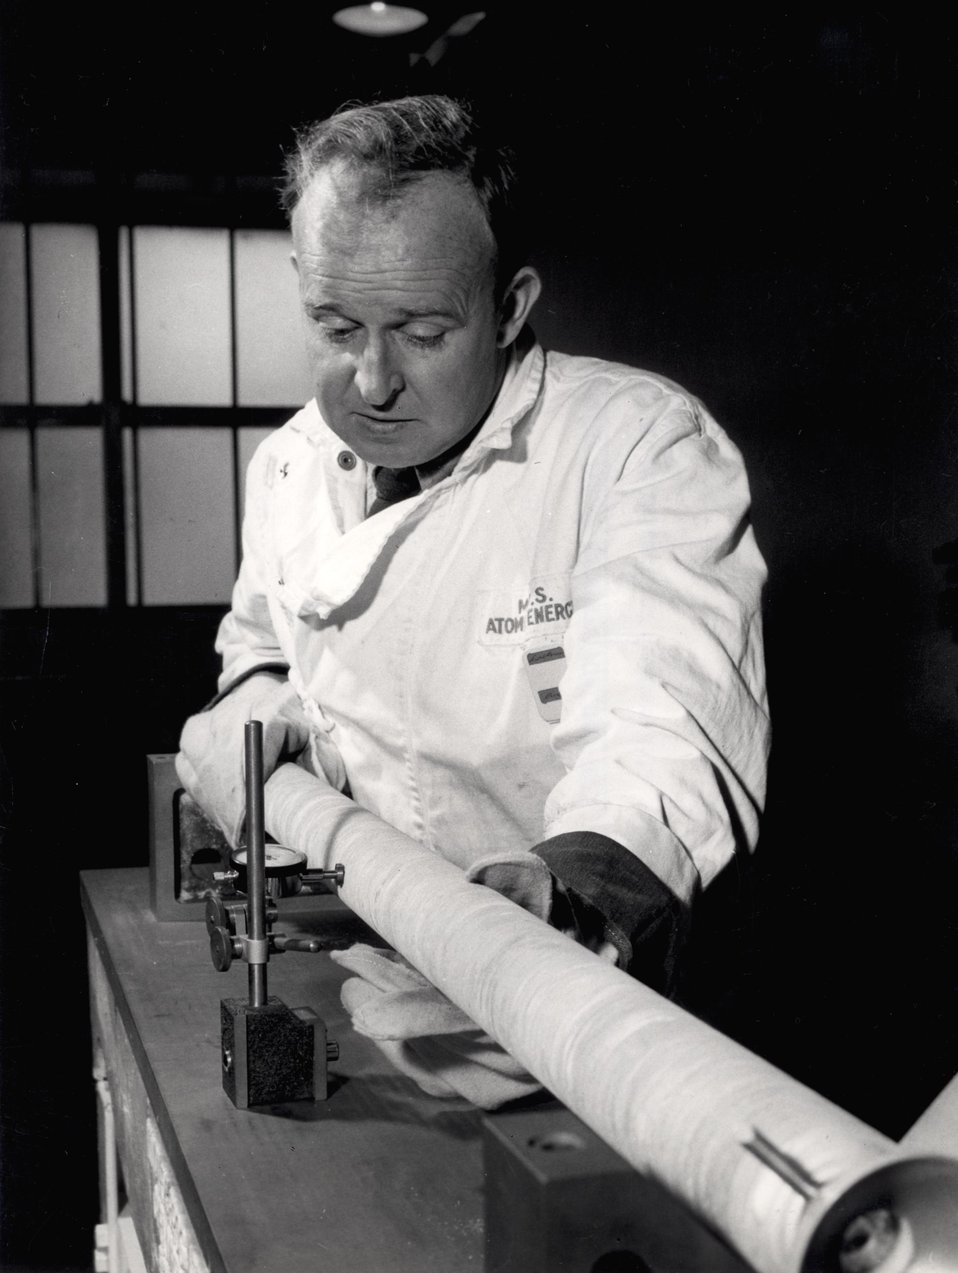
Britain's First Atomic Power Station, Calder Hall. Process worker W. Malkinson of Calder Hall inspecting the fins of a Calder type fuel element. c. 1956